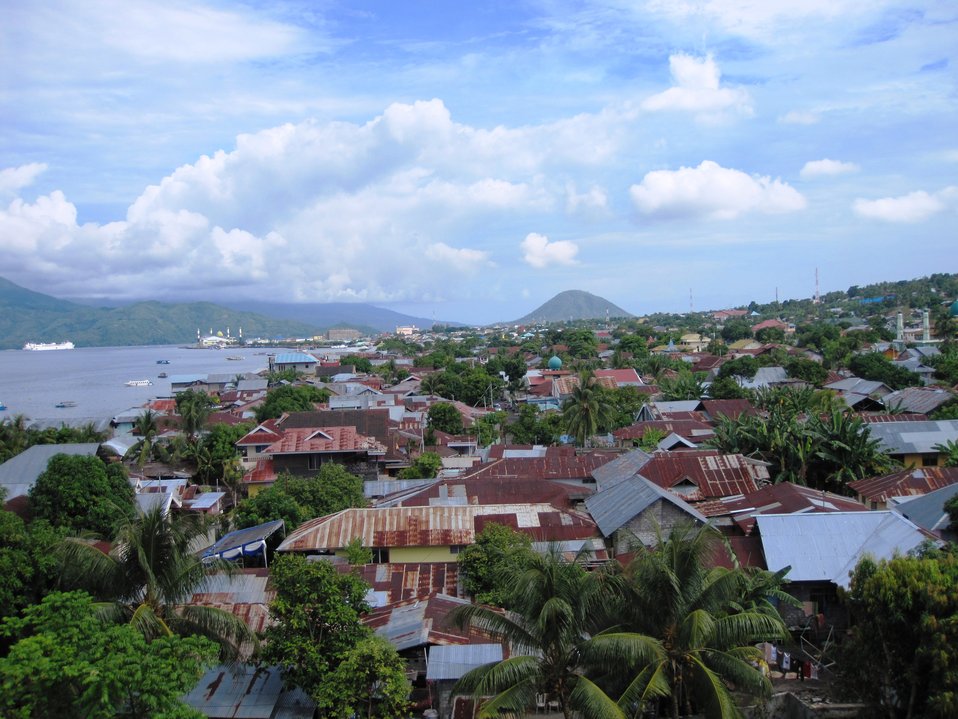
Pacific Partnership 2010 Arrives in Termate, Indonesia

U.S. Foreign Service Liaison Officer Tom Weinz captures a photo as the USNS Mercy for Pacific Partnership 2010 arrives in Termate, Indonesia, on July 18, 2010.